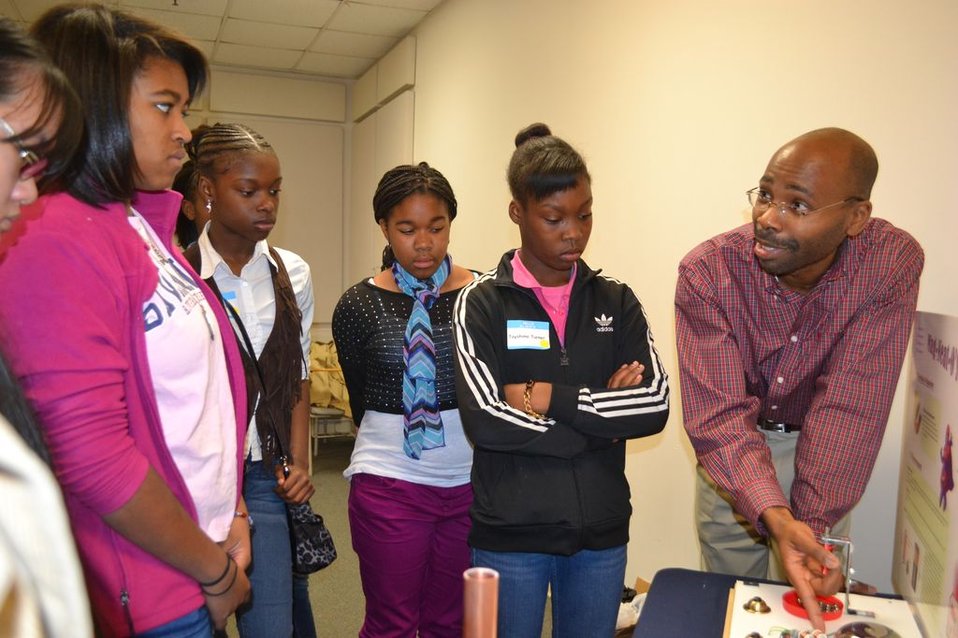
Spelman Girls Institute Nov 2012

At the Spelman Girls Institute, girls participated in workshops like Adventure Time, a forensics workshop that demonstrated the math and problem solving aspects of forensics in a Clue-meets-CSI challege.